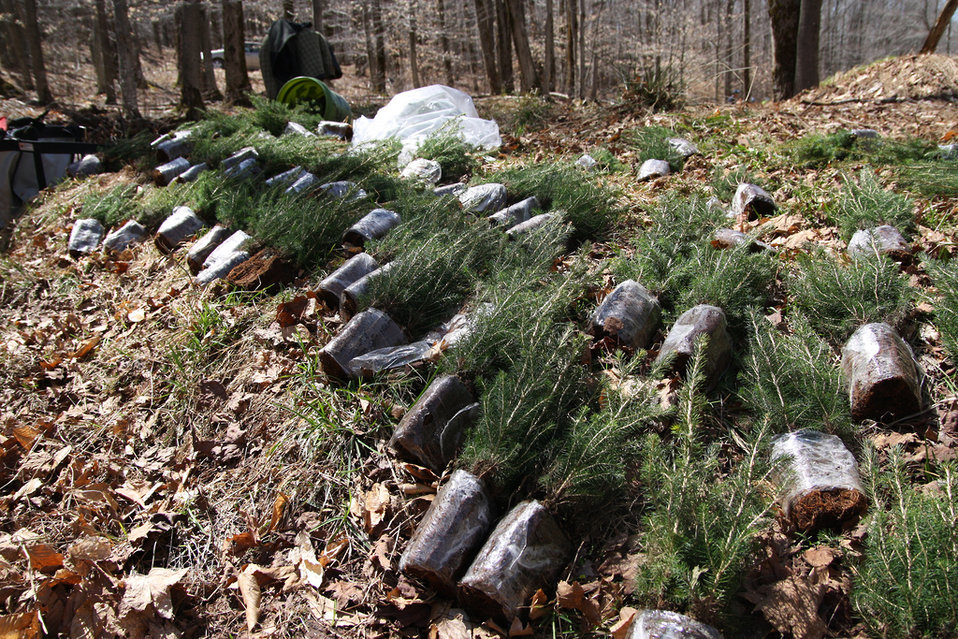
Red Spruce Seedlings Ready for Planting

Canaan Valley National Wildlife Refuge works with partners for restore the historic red spruce forest ecosystem on the refuge and the Allegheny Highlands. The red spruce ecosystem is critical in perpetuating the biological diversity of the region and for providing habitat for rare wildlife like the threatened Cheat Mountain Salamander.